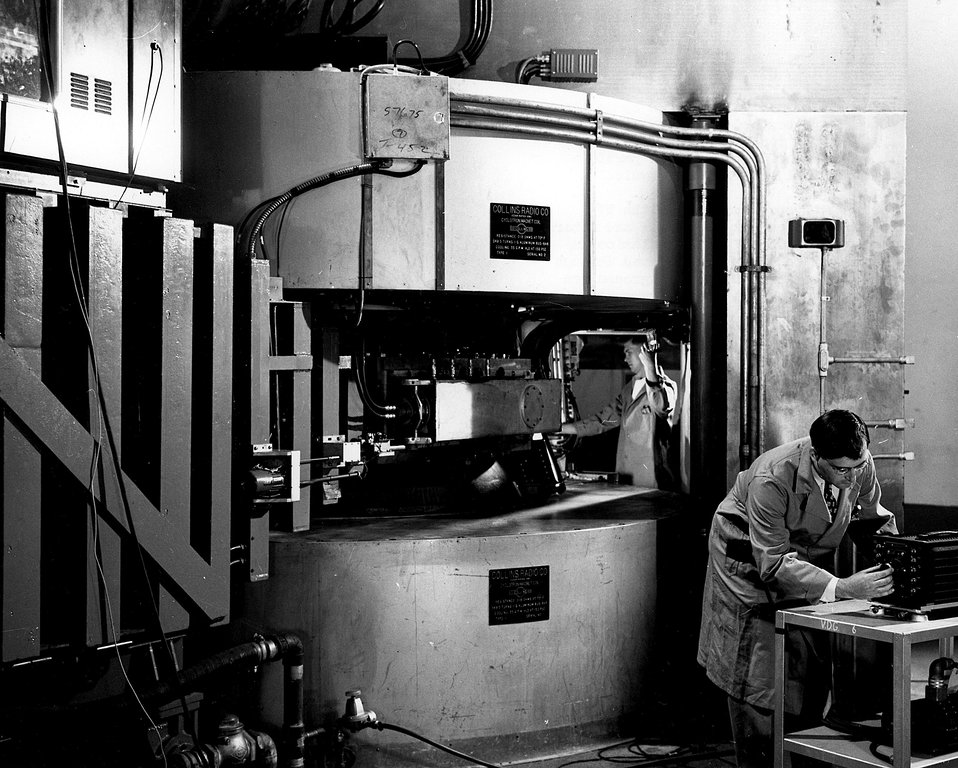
The Gyclotron at AEC's Brookhaven National Laboratory.